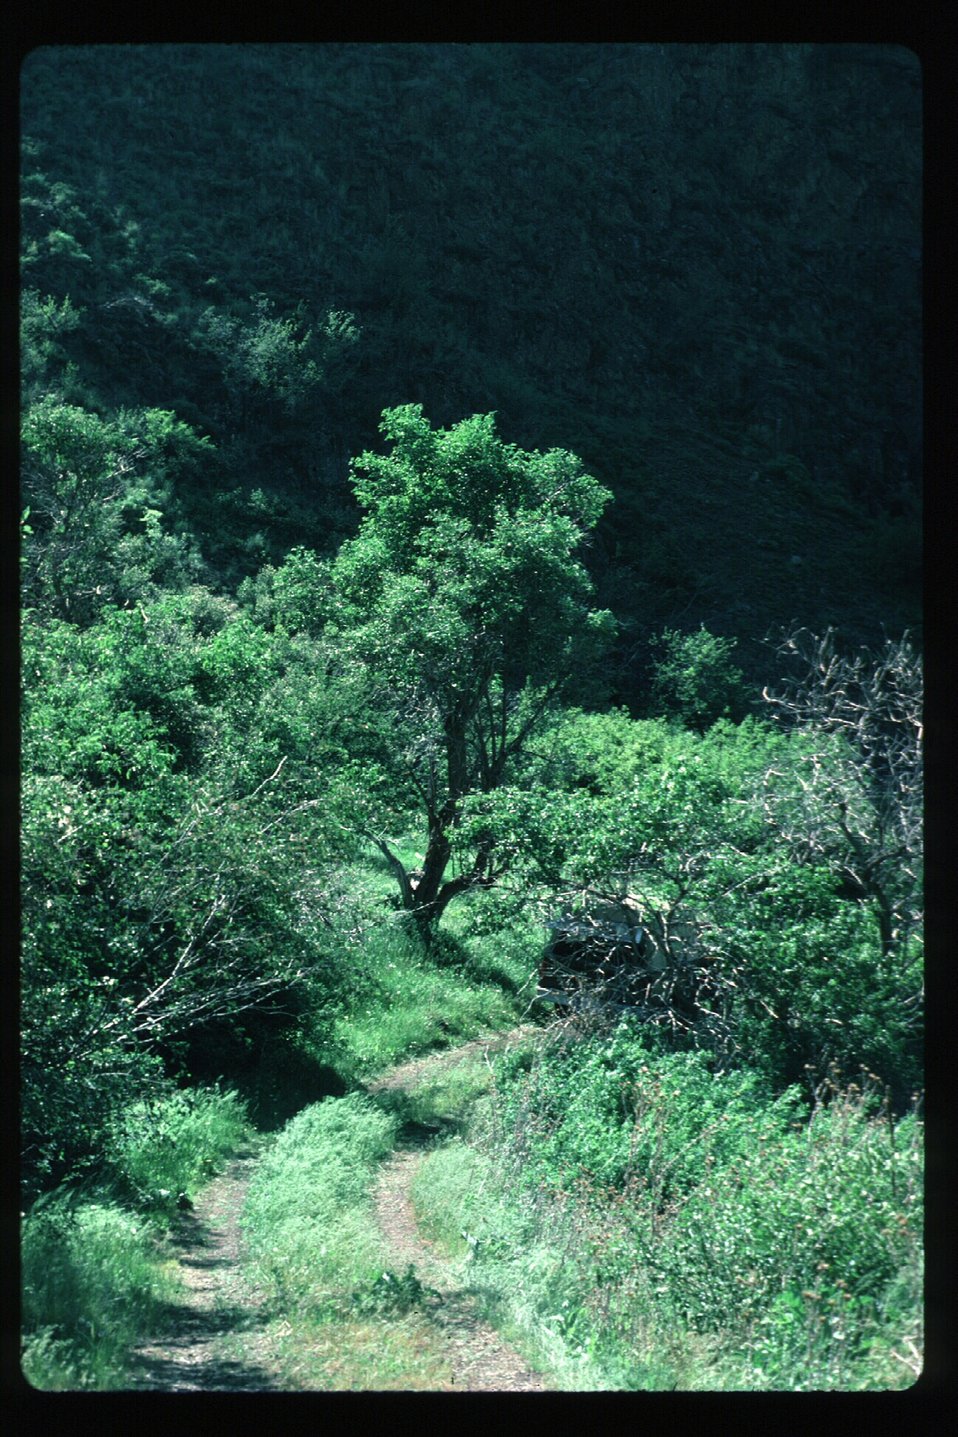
Elderberry Tree Sambucus Brush, grasses Wildflowers